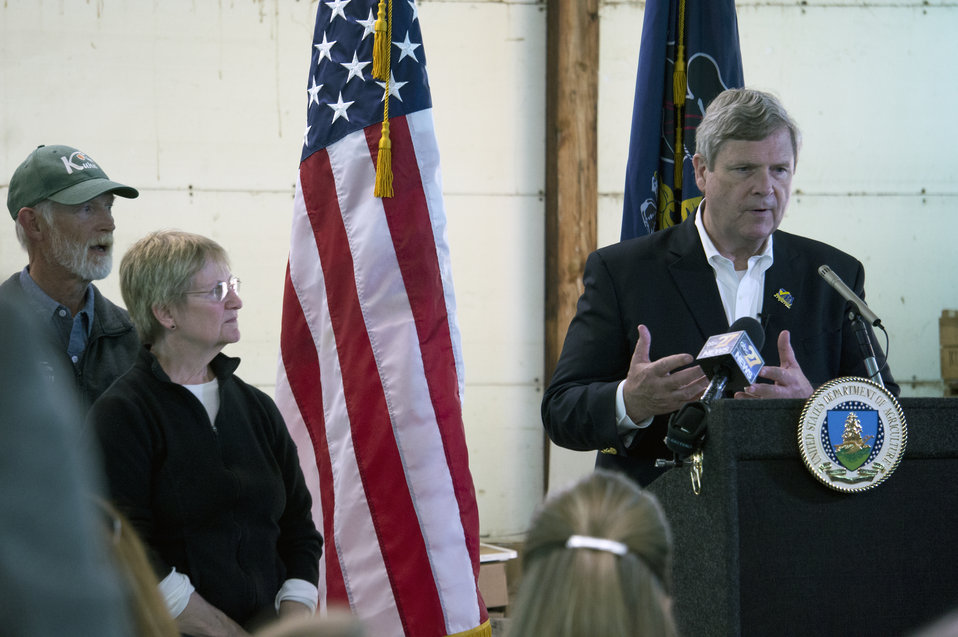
Agriculture Secretary Tom Vilsack speaks at the Kuhn Family Farm in Pennsylvania highlighting U.S. Department of Agriculture (USDA) conservation practices on Thursday, May 1, 2014.